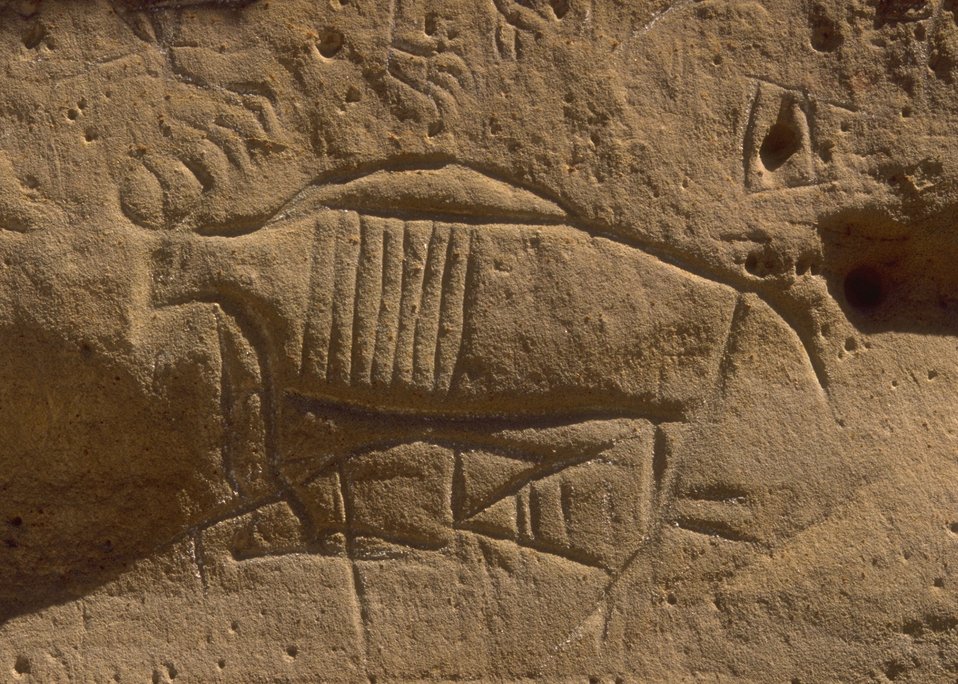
White Mountain Petroglyphs, Rock Springs Field Office.